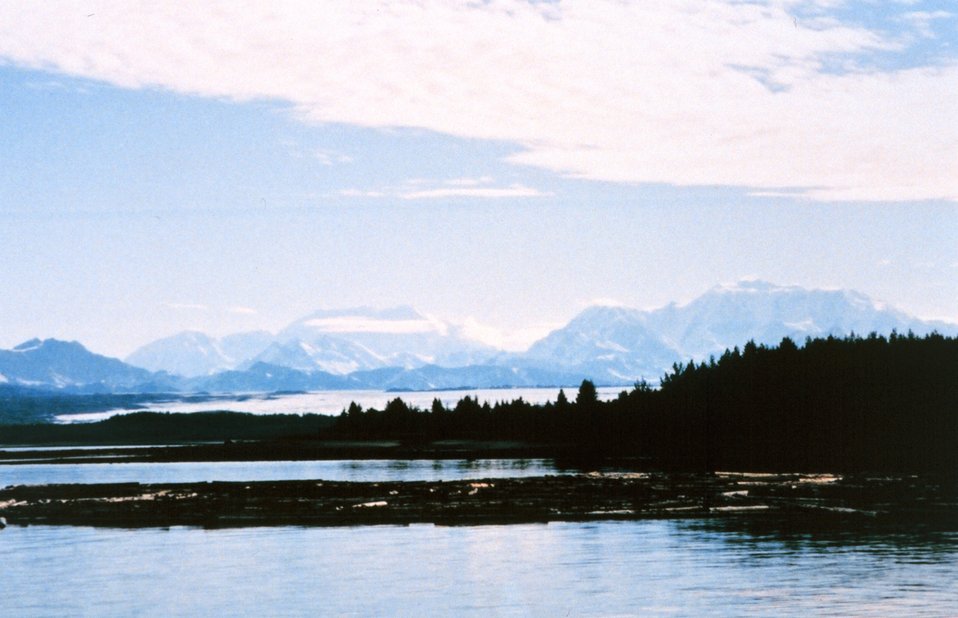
Log raft in Icy Bay area. Mount St. Elias in background on right.